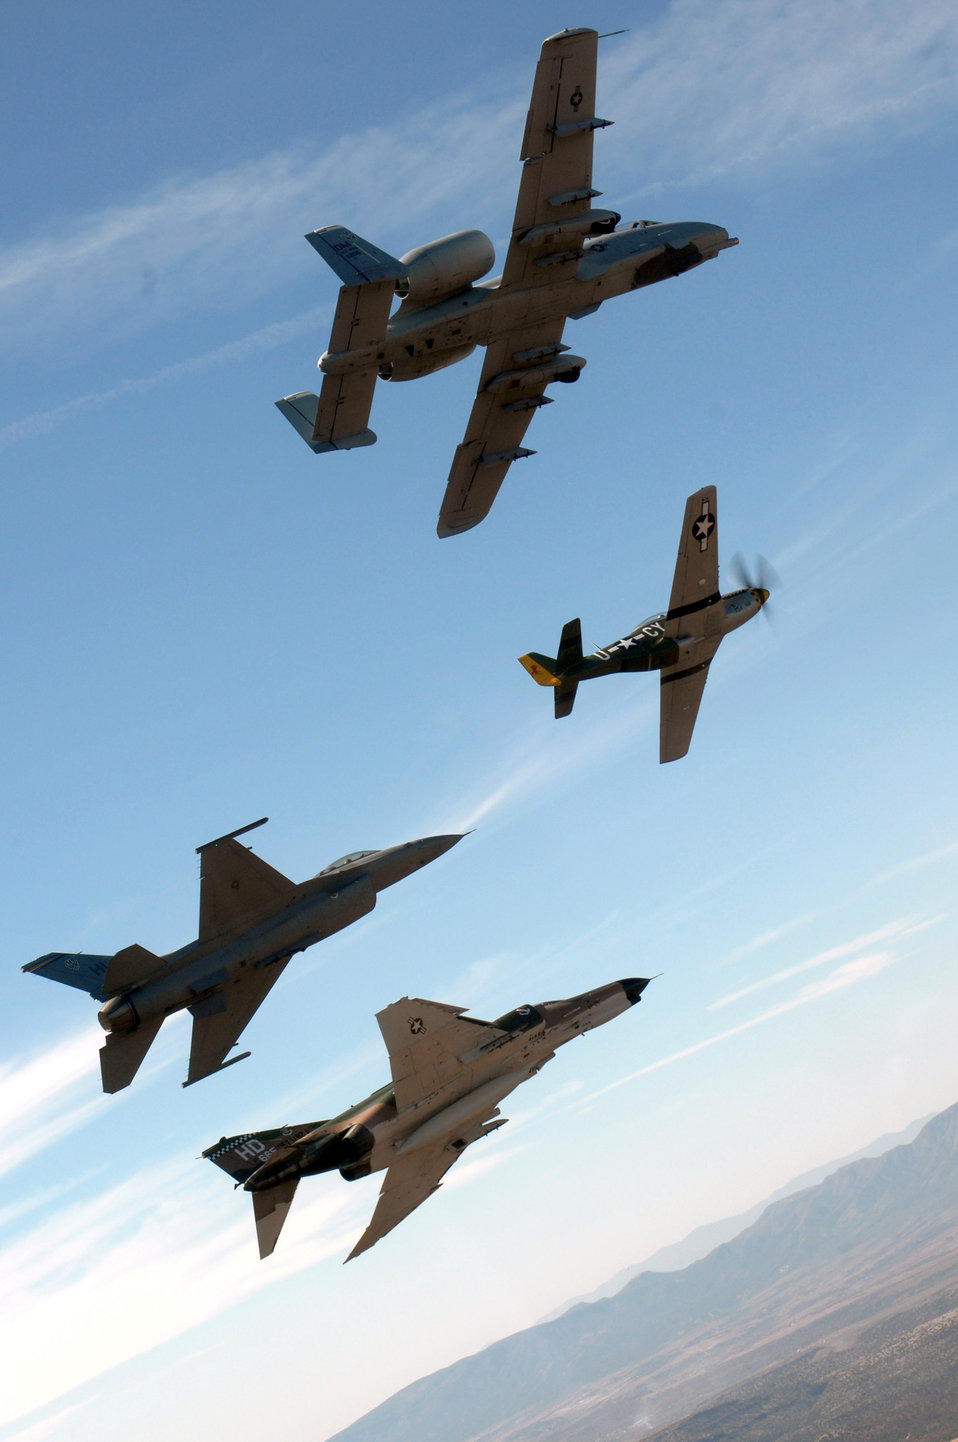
Planes of past and present soar over Sedona

An Air Force heritage flight consisting of a P-51 Mustang, an F-4 Phantom, an A-10 Thunderbolt and an F-16 Fighting Falcon fly over the Arizona desert on March 19 above Sadona. The flight was part of the events taking place in Phoenix for the first Air Force Week celebration of the year.